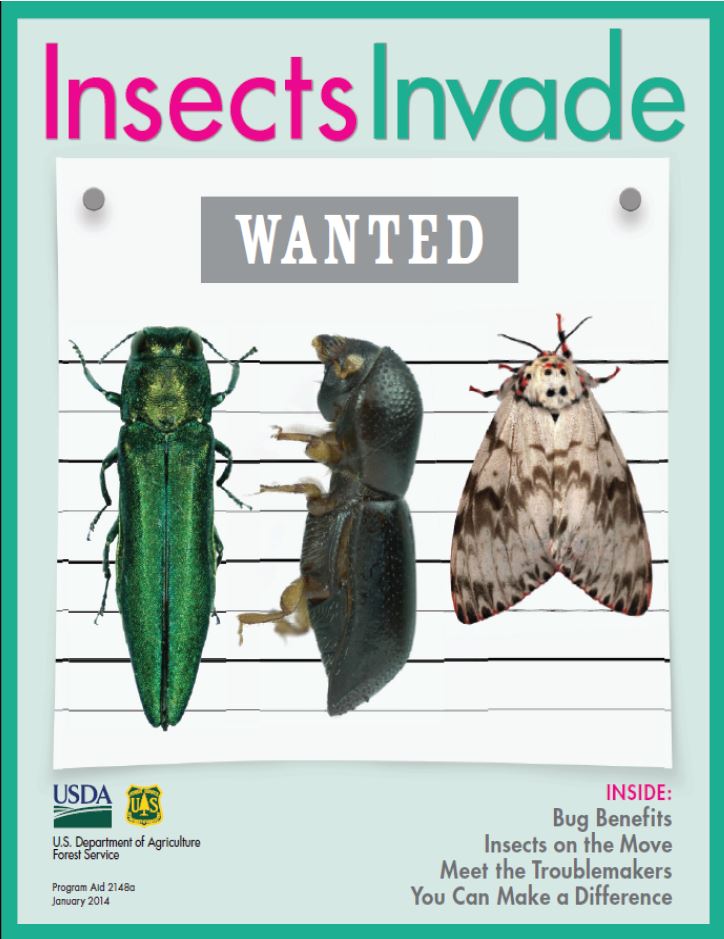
InsectsInvadeCover

The Insects Invade magazine developed by the U.S. Forest Service in collaboration with Scholastic Incorporated was distributed to 25,000 teachers nationwide this year.